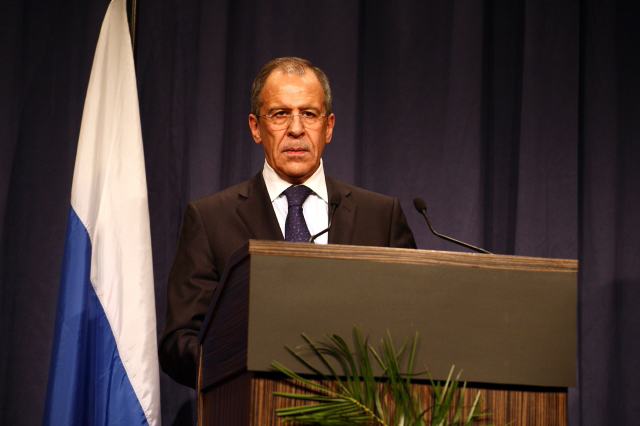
Press Conference With Russian Foreign Minister

Press conference after dinner meeting between U.S. Secretary of State Hillary Rodham Clinton and Russian Foreign Minister Sergey Lavrov in Geneva, Switzerland March 6, 2009.